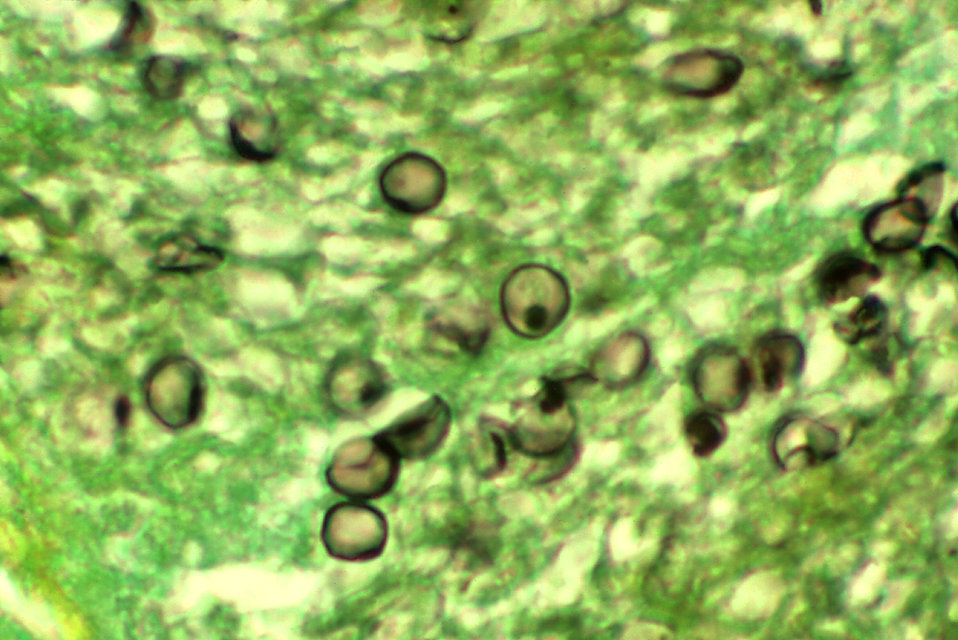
Cysts of Pneumocystis jirovecii, formerly known as Pneumocystis carinii in an AIDS patient. Methenamine silver stain.